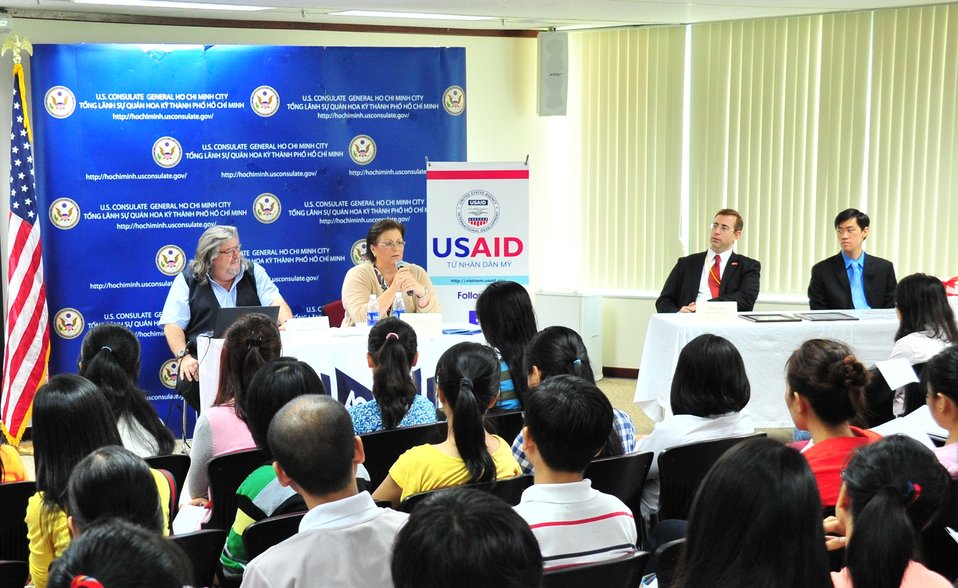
U.S. Embassy Deputy Chief of Mission Claire Pierangelo speaks at the USAID Women in Science and Technology Essay Contest Award Ceremony